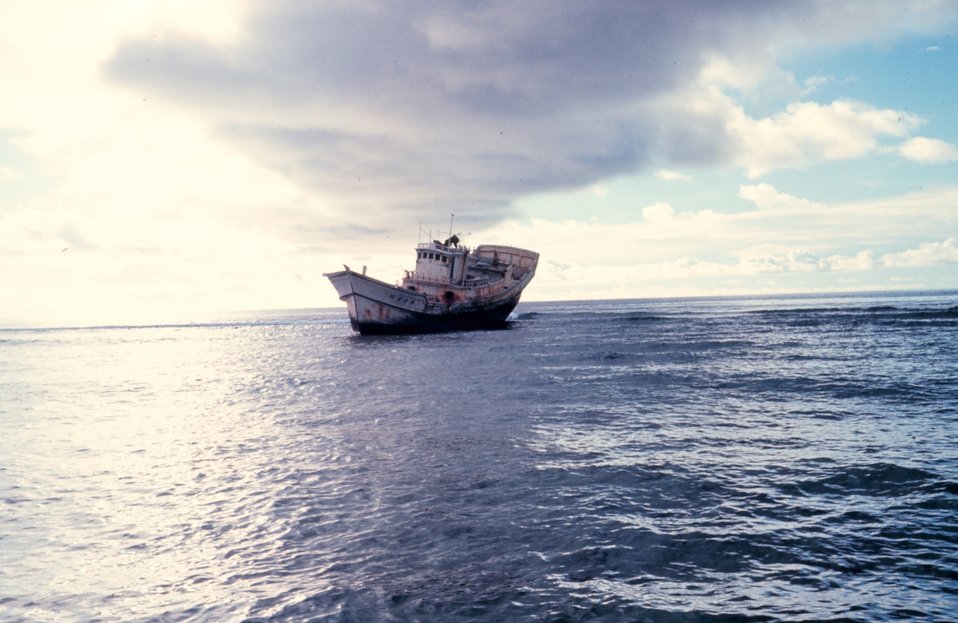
Wrecked Taiwanese tuna vessel. Still had tons of tuna on board. Thousands of rats had taken over ship with relatively unlimited food supply.